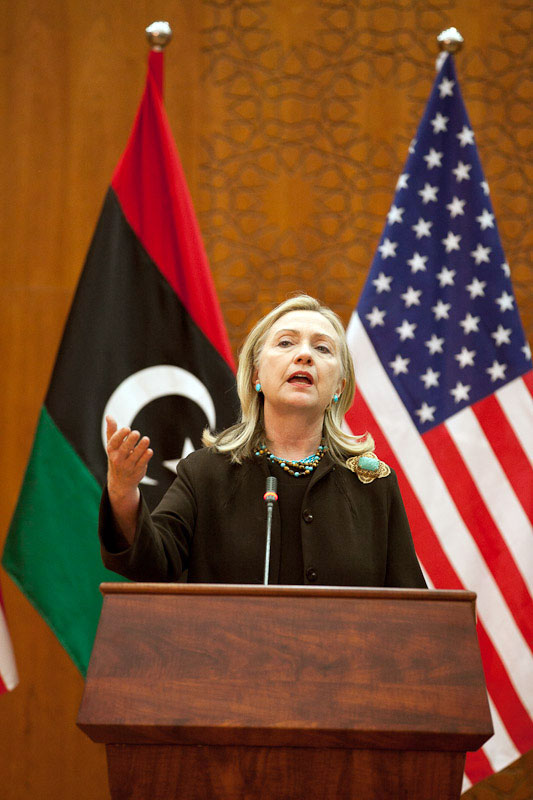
Secretary Clinton Delivers Remarks

U.S. Secretary of State Hillary Rodham Clinton delivers remarks at the World Islamic Call Society Headquarters in Tripoli, Libya, on October 18, 2011.